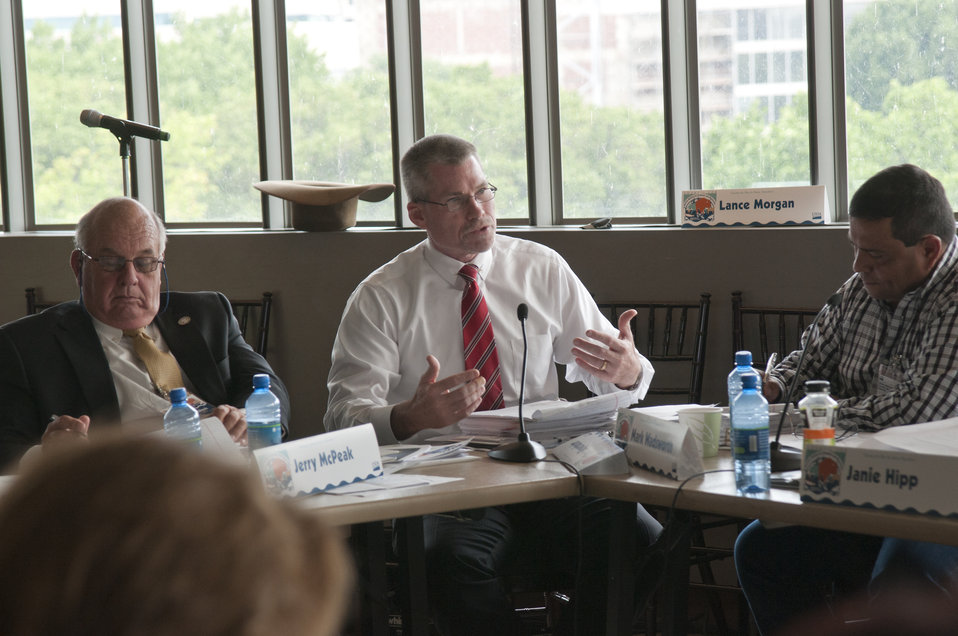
U.S. Department of Agriculture (USDA) Farm Service Agency (FSA) Deputy Administrator for Farm Loan Programs Chris Beyerhelm speaks at the conclusion of the first business meeting of USDA’s Council for Native American Farming and Ranching (CNAFR) held at the National Museum of the American Indian in Washington, D.C., on Wednesday, Aug. 15, 2012. CNAFR was created to advise the Secretary on ways to eliminate barriers to participation for Native American Farmers and Ranchers in USDA programs. The Council was established as part of the Keepseagle settlement, and is conducted under the oversight of USDA's Office of Tribal Relations under the Office of the Secretary of Agriculture.